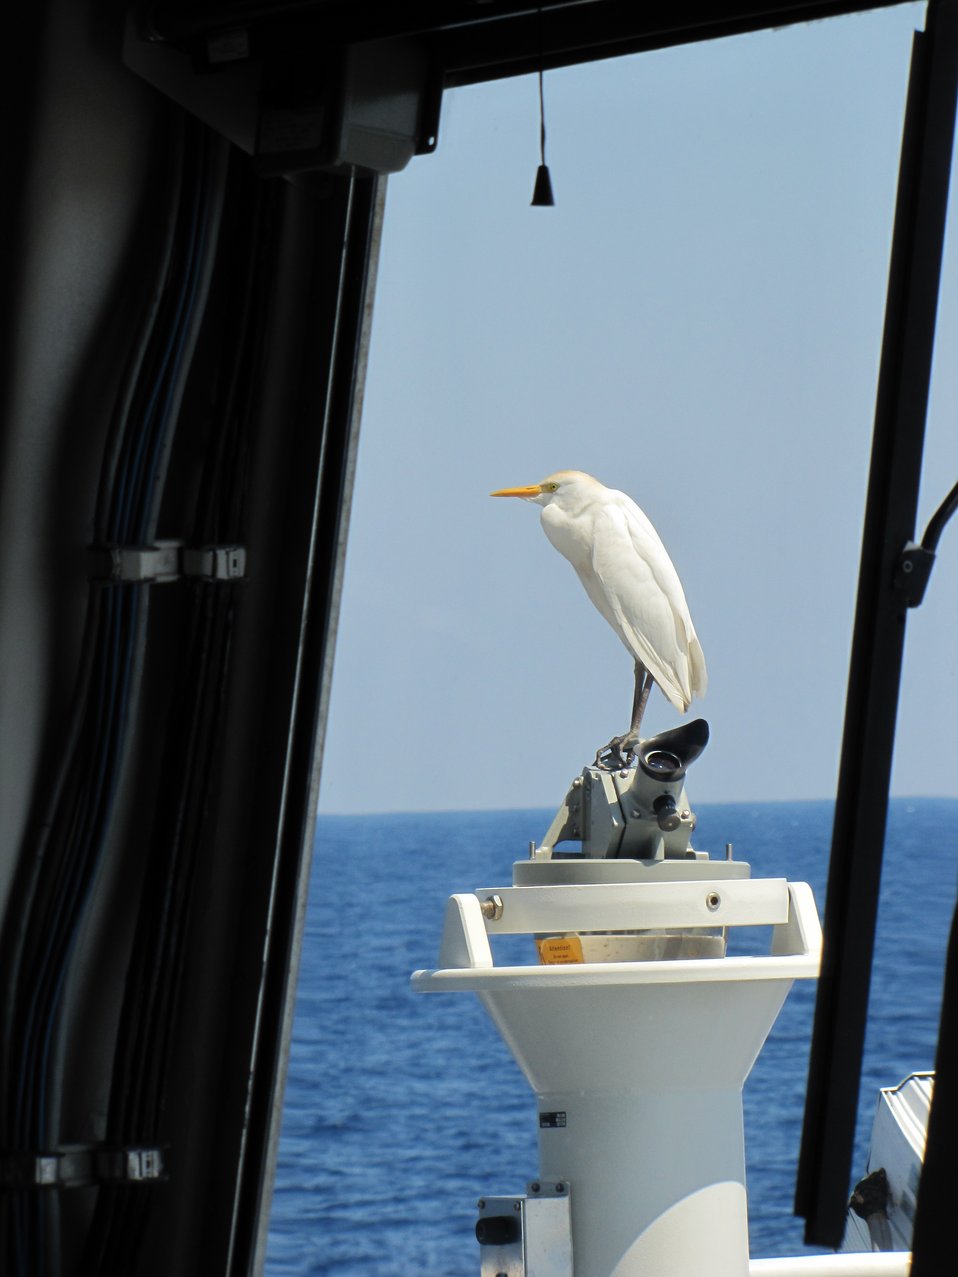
Cattle egret blown lost offshore perched on compass stand alidade